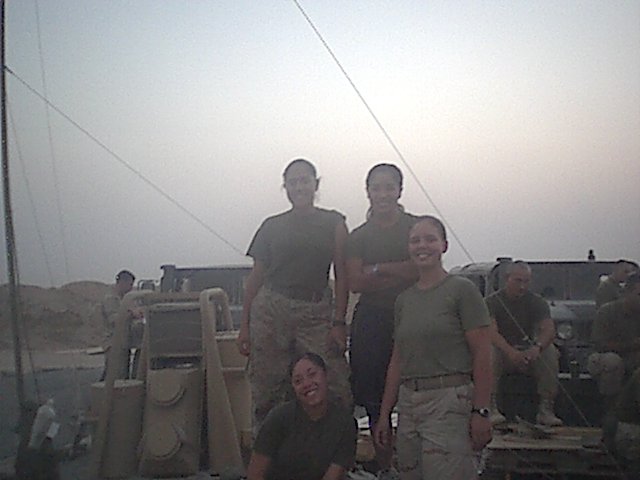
Hannah Beck, an Administrative Assistant in Ecological Services in Region 3, served in Iraq with the Marine Corps.